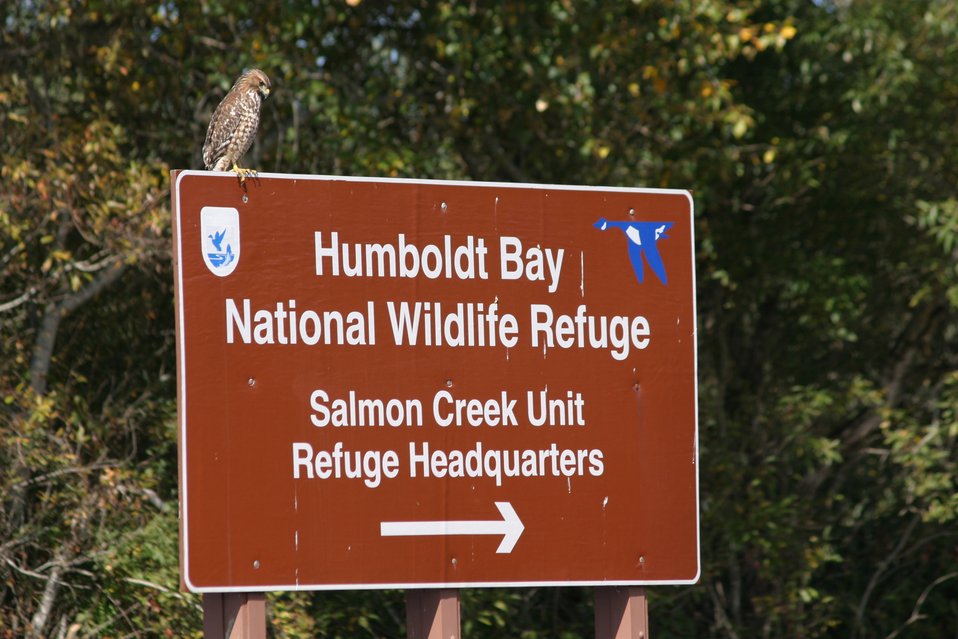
Humboldt Bay NWR

Entrance sign.